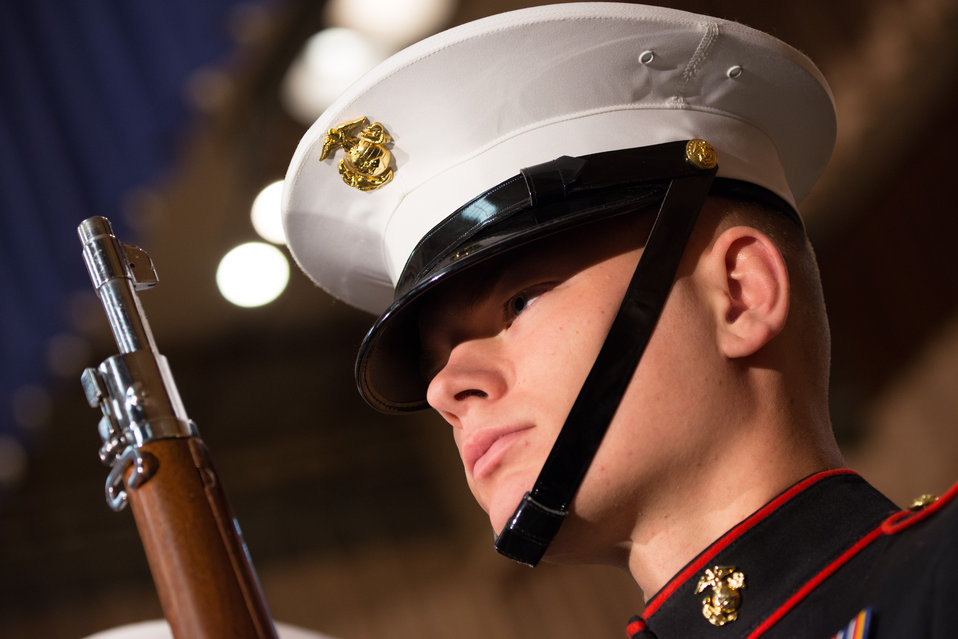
The U.S. Military District of Washington Joint Armed Forces Color Guard present the Colors, during the 2013 U.S. Department of Agriculture (USDA) Veterans’ Day Observance, whose theme is “VALOR, COURAGE, SACRIFICE – HONORING ALL WHO SERVED,” in Washington, DC, on Wednesday, November 20, 2013.